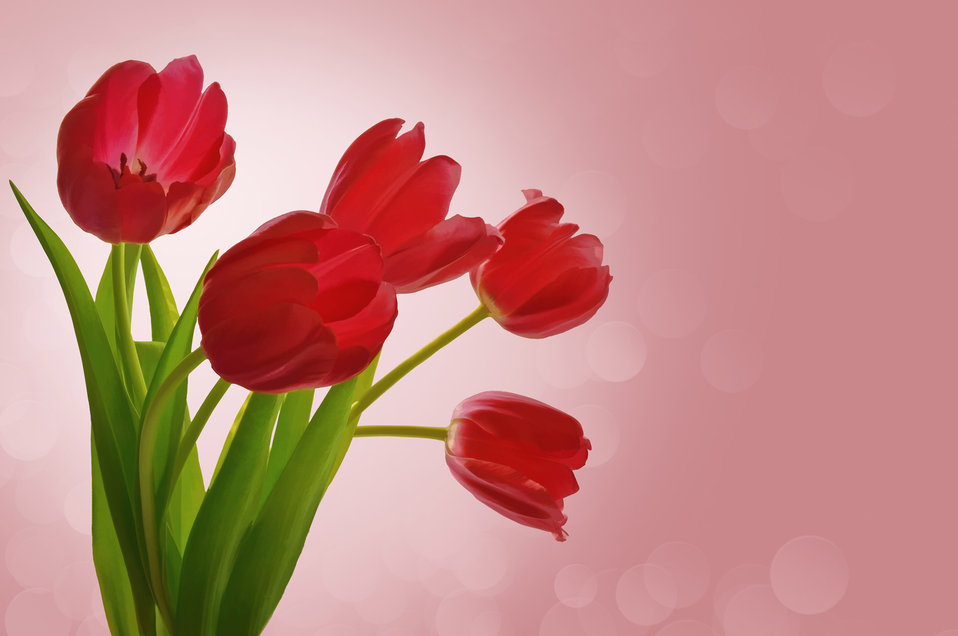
Background with tulips

A festive background with tulips. imitation watercolors.